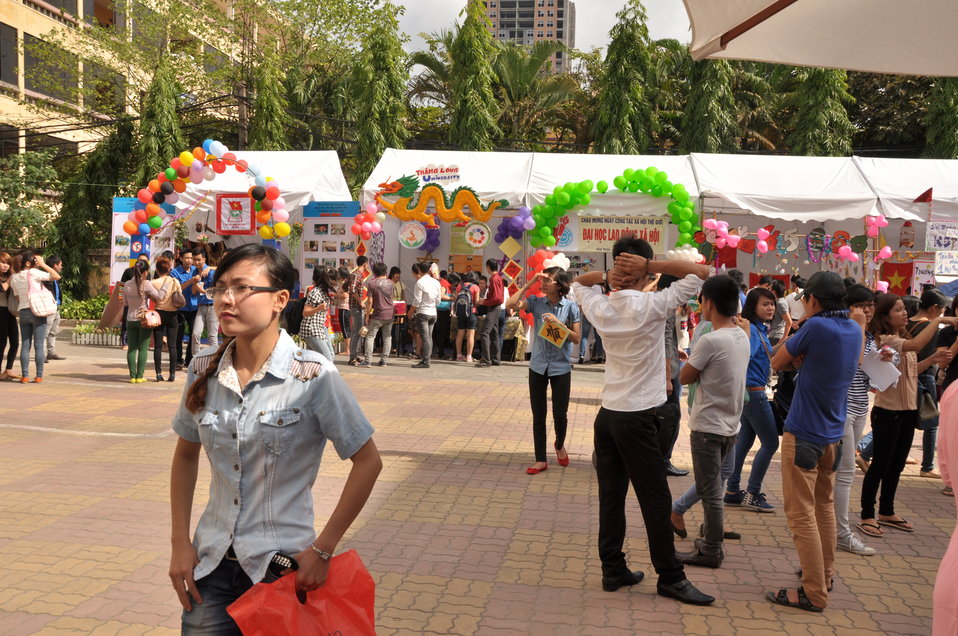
USAID Supports Social Work Education

Photo: @USAIDVietnam, November 9, 2012